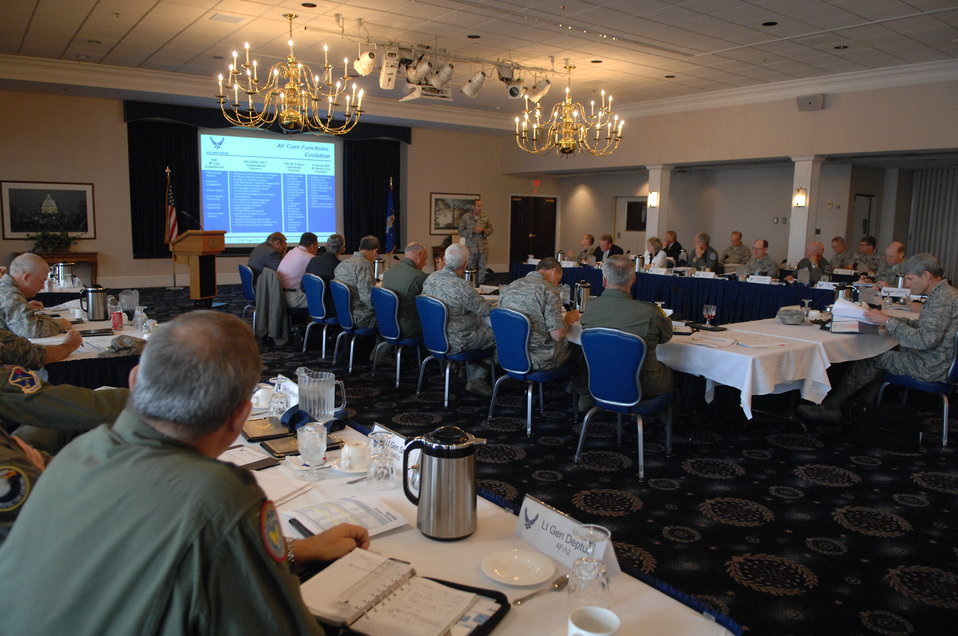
Senior leaders meet to discuss, decide way ahead for force

Senior Air Force leaders listen to a briefing during a strategic summit Aug. 27, at Bolling Air Force Base, D.C.